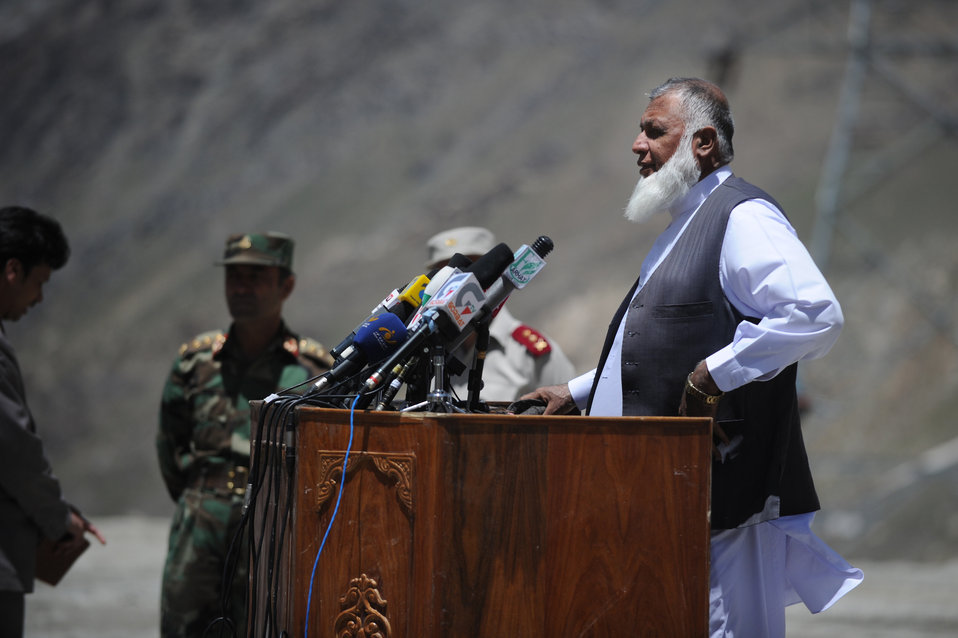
Baghlan Governor Mohammad Akbar Barakzai makes remarks during a ceremony to mark the beginning of renovations at the Salang Tunnel on the border of Parwan and Baghlan Provinces, Afghanistan, on Wednesday, June 15, 2011. (S.K.Vemmer/Department of State)